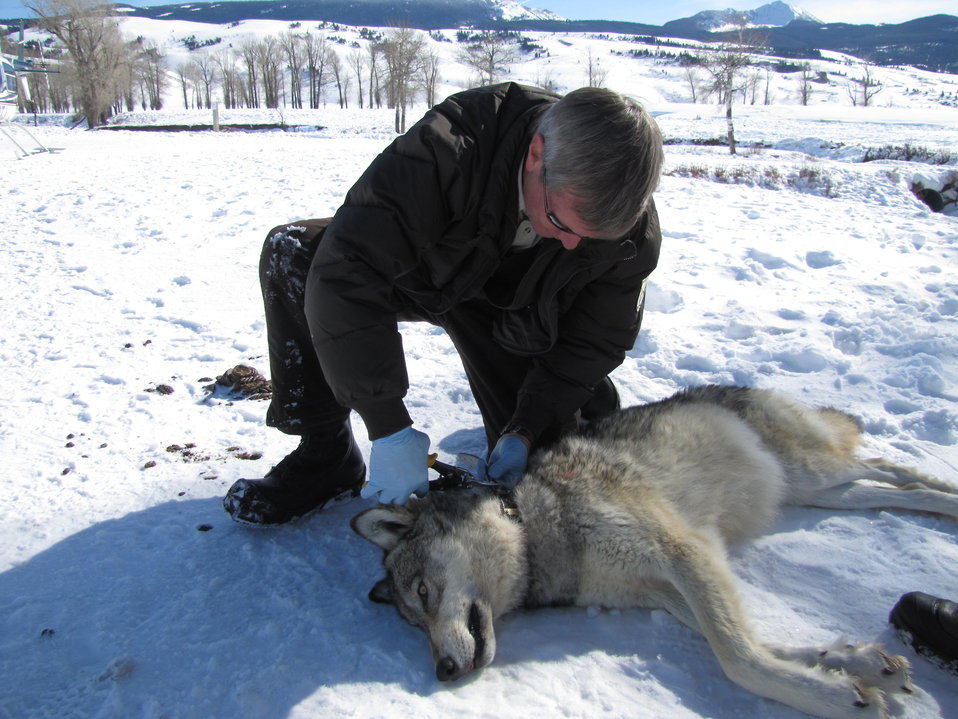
Fastening a Collar

Refuge Manager Steve Kallin places a collar on a yearling female wolf.